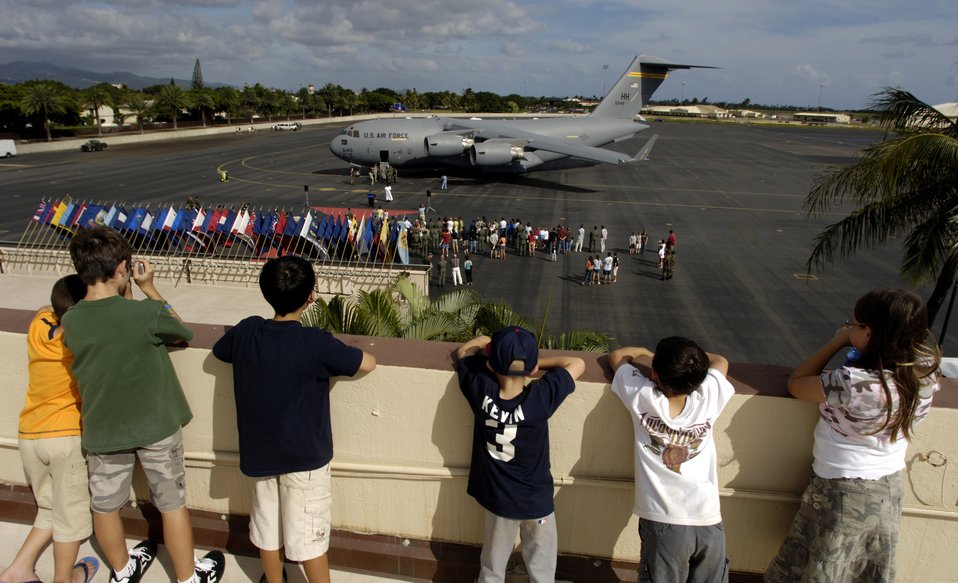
Globemaster III fleet grows at Hickam

Children get a better view of the C-17 Globemaster III arrival ceremony from the roof of the operations building Saturday, April 8, 2006, at Hickam Air Force Base, Hawaii. This aircraft is the fourth C-17 to be assigned to Hickam. It will transition the 15th Airlift Wing and Hawaii Air National Guard's 154th Wing from training to operations.